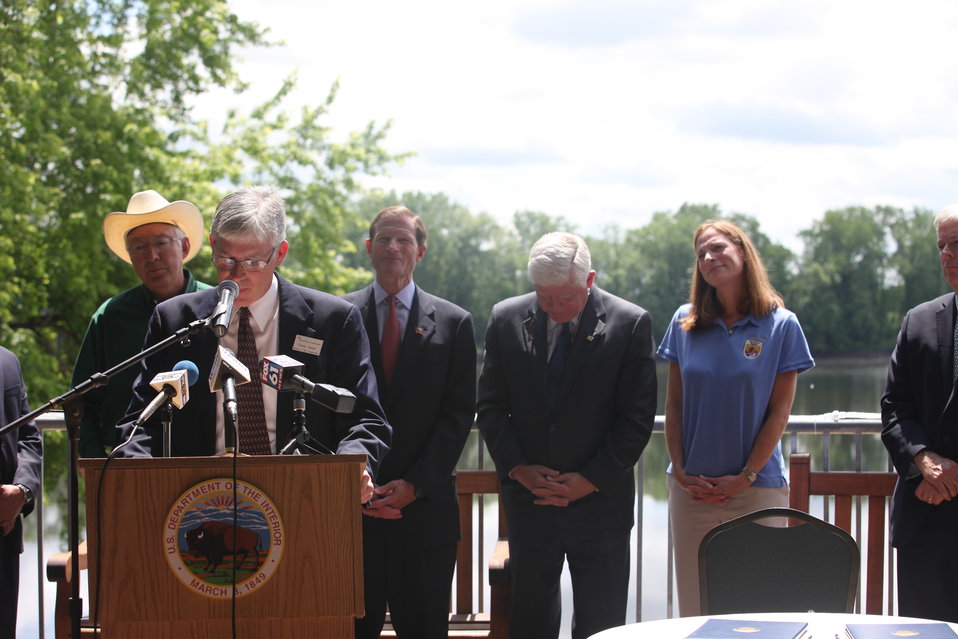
Conte Friends Group

President of the Friends of the Silvio O. Conte National Fish & Wildlife Refuge Patrick Comins